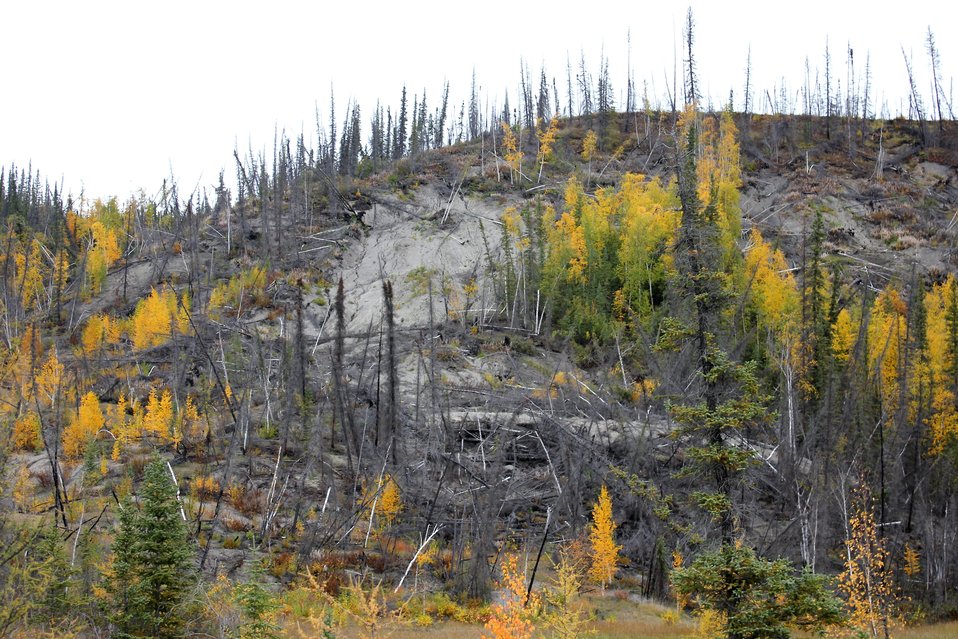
Combination of forest fire and melting permafrost causing radical changes to local ecology